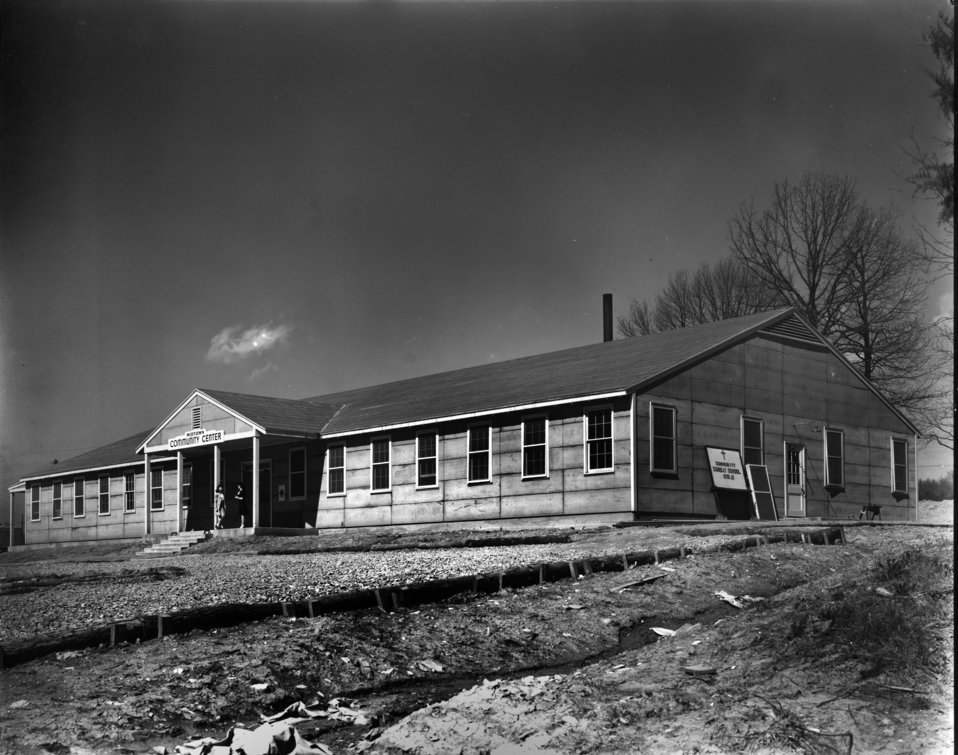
Midtown Community Center Oak Ridge

S-187 DOE photo by Ed Westcott Oak Ridge, Tennessee 1945